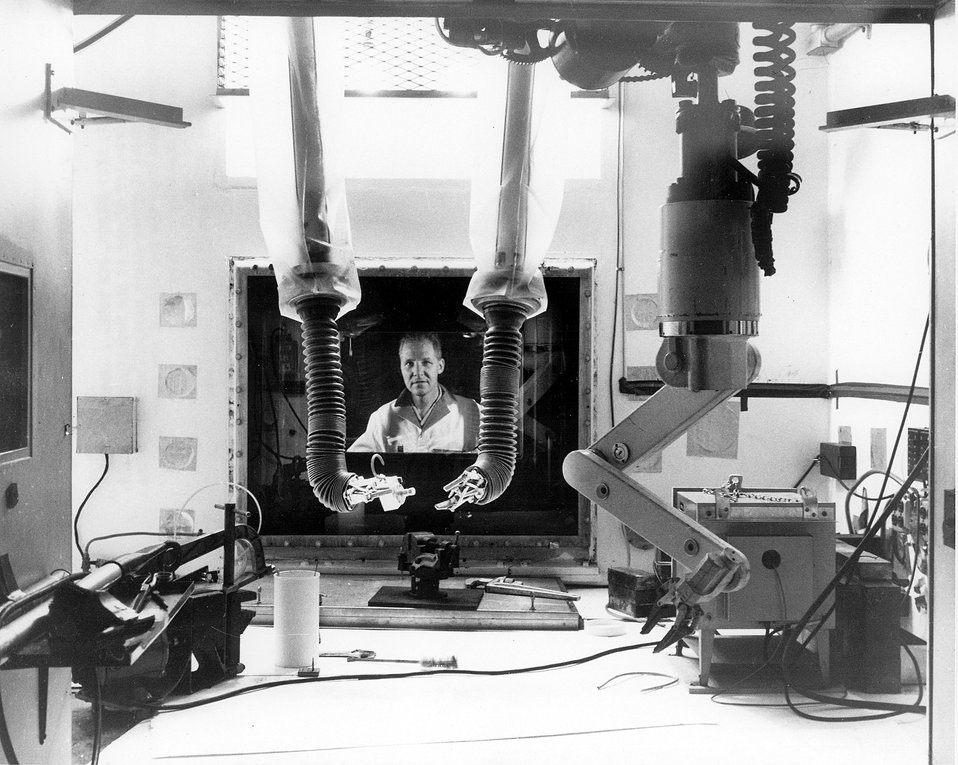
Rear view of the interior of one the Metallurgy Hot Cells.